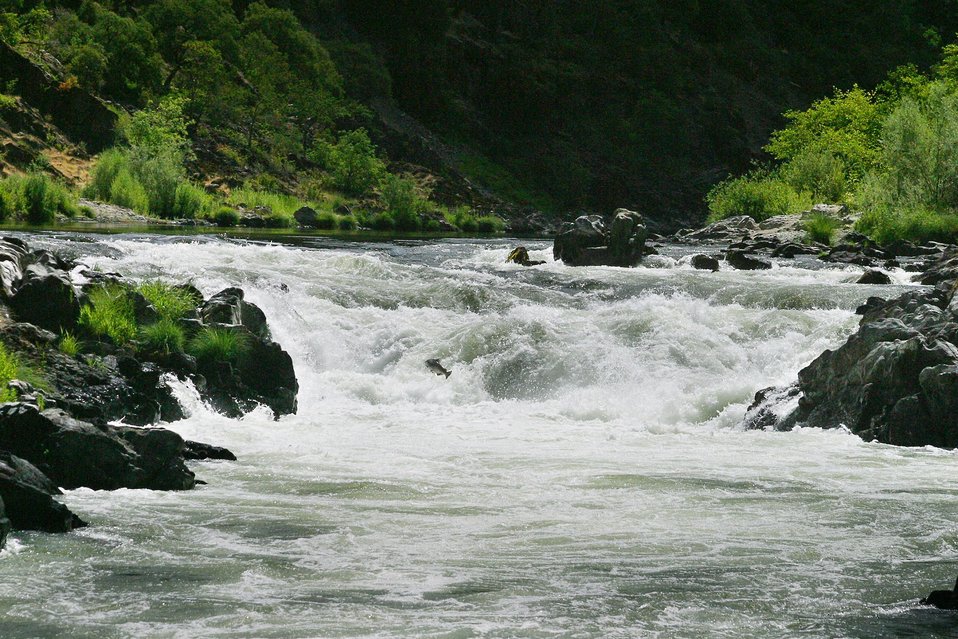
Salmon jumping up the main falls of Rainie Falls.